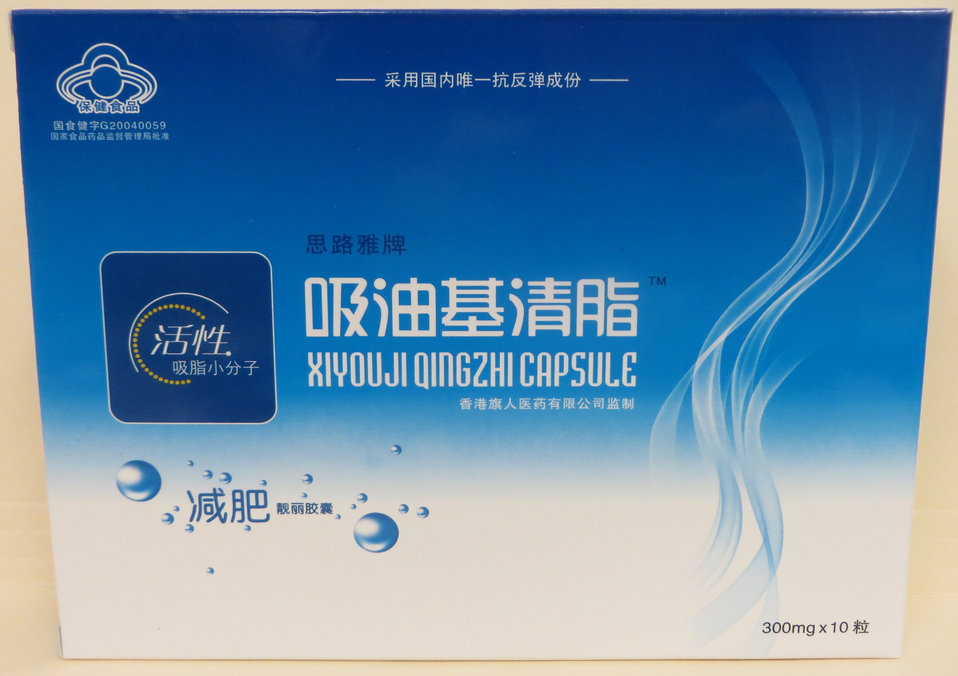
XIYOUJI QINGZHI CAPSULE

June 10, 2013 - The FDA is advising consumers not to purchase or use 'XIYOUJI QINGZHI CAPSULE,' a product promoted and sold for weight loss. The product was found to contain undeclared sibutramine. For more information, go to www.fda.gov/Drugs/ResourcesForYou/Consumers/BuyingUsingMe...

And read this Consumer Update: Beware of Fraudulent ‘Dietary Supplements’